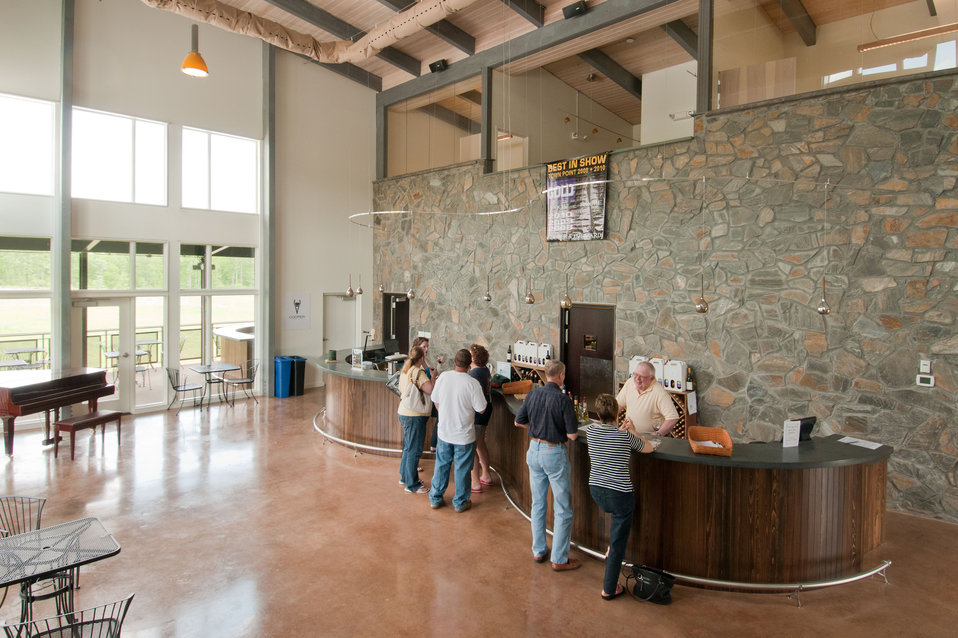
Daniel Powell tends to guests at Cooper Vineyards in Louisa, VA, the first winery on the East Coast and the second in the country to be awarded the fourth and highest, Platinum certification by Leadership in Energy and Environmental Design (LEED).
From a Virginia Wine Board Marketing Office press release, “The process of building a LEED platinum certified building was initially more expensive and arduous than co-owners, Jacque Hogge, MD and Geoffrey Cooper, MD expected, but they were able to get financial assistance from the United States Department of Agriculture. “Know that there are grants available to help with the costs of sustainable building projects,” Hogge advises to other potential green wineries. Cooper Vineyards received 2 of the 3 USDA (U.S. Department of Agriculture Rural Development (RD) Rural Energy Financing program) grants awarded in Virginia in 2010 to help with the expenses of their construction.”
Rural Energy Financing program focuses on loan guarantees, loans and grants to agricultural producers, businesses, cooperatives and rural residents for renewable energy systems and to make energy efficiency improvements.
The tasting room and building collects rainwater from the roof; uses low flow water fixtures to reduce usage by 40%; utilizes structurally insulated panels for the roof and walls; heats and cools the entire building using a geothermal system that includes pipes that are embedded in the parking lot; low-voltage LED lighting with daylight and occupancy sensors provide ample light when it is needed; a solar panel array provides more than 15% of the energy needs for the building, and much of the construction materials are from local and recycled material sources. For more information about USDA please go to www.usda.gov, Rural Development and Rural Energy Financing. LEED was developed by the U.S. Green Building Council (USGBC) is a 501 c3 non-profit organization committed to a prosperous and sustainable future for our nation through cost-efficient and energy-saving green buildings.